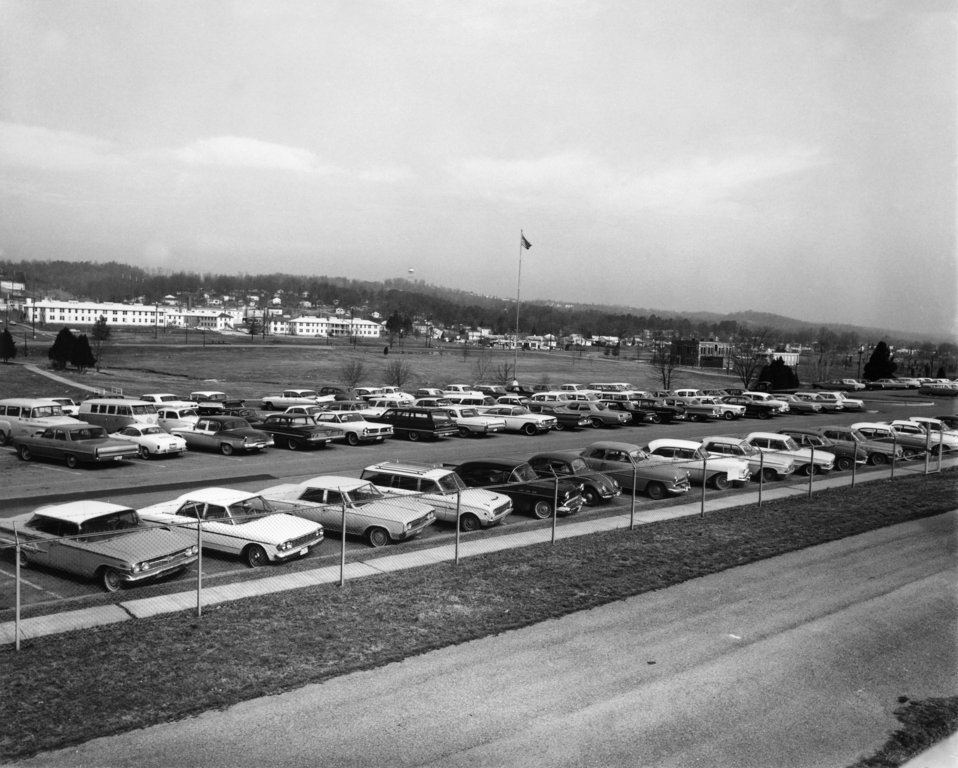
Proposed New Bldg. Site for DOE Federal Bldg. Oak Ridge

65-59 DOE photo by Ed Westcott 2-16-1965 Oak Ridge Tennessee